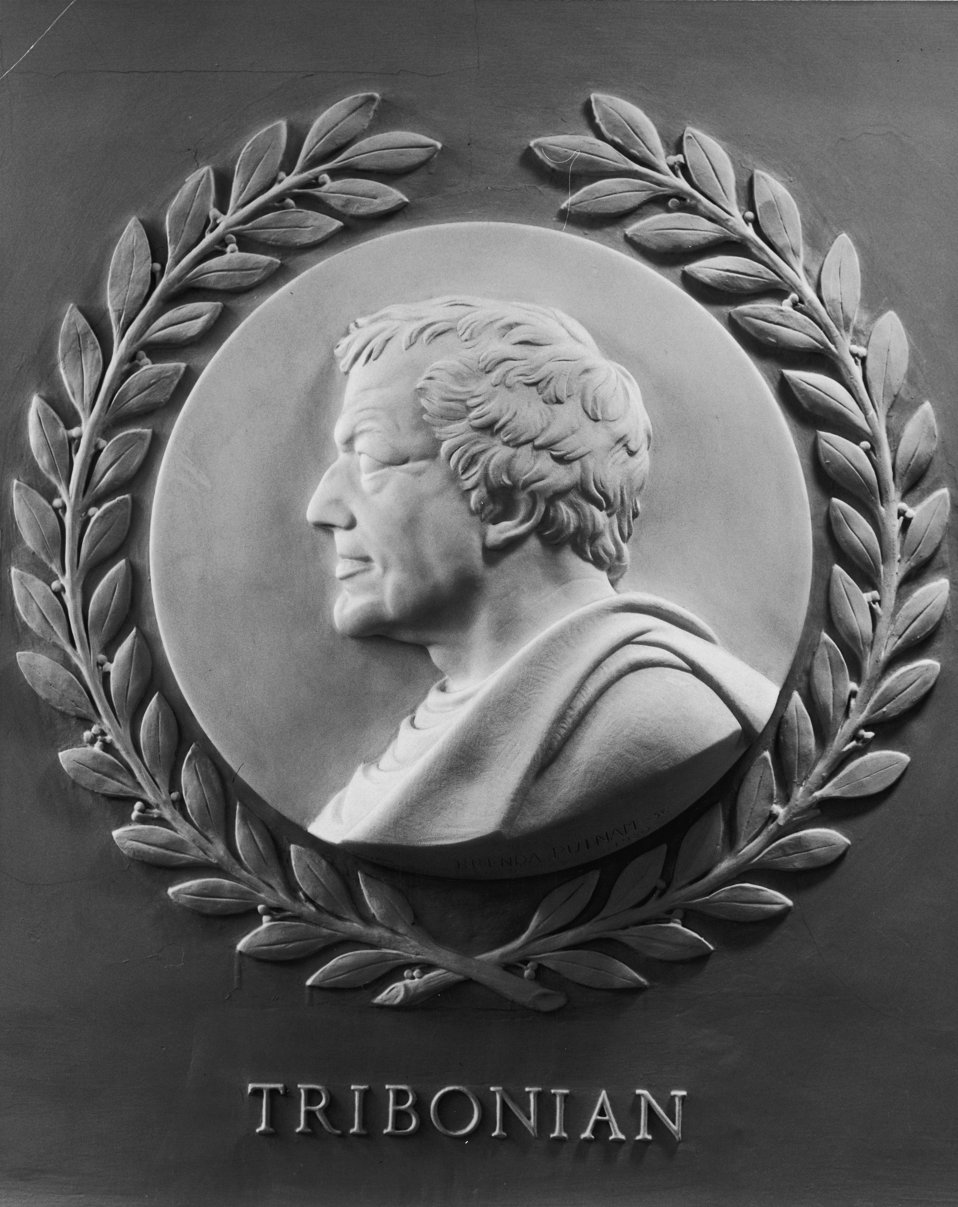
Tribonian (c. 500-547)

Byzantine jurist; head of the commission that codified the laws under Justinian I.

Brenda Putnam
Marble, 28' dia.
1950
House of Representatives Chamber